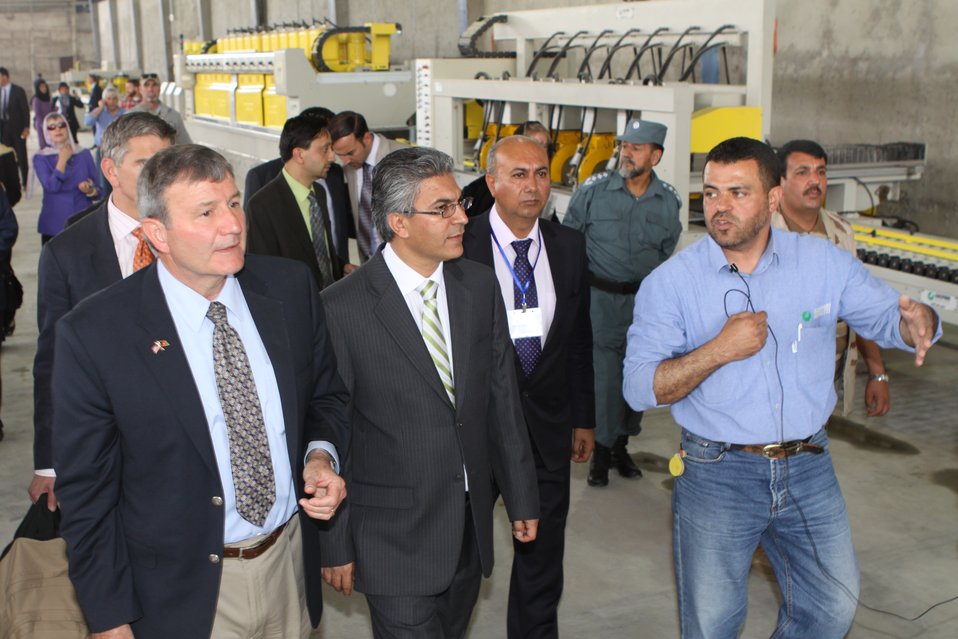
100525 Hirat Marble Conference 407